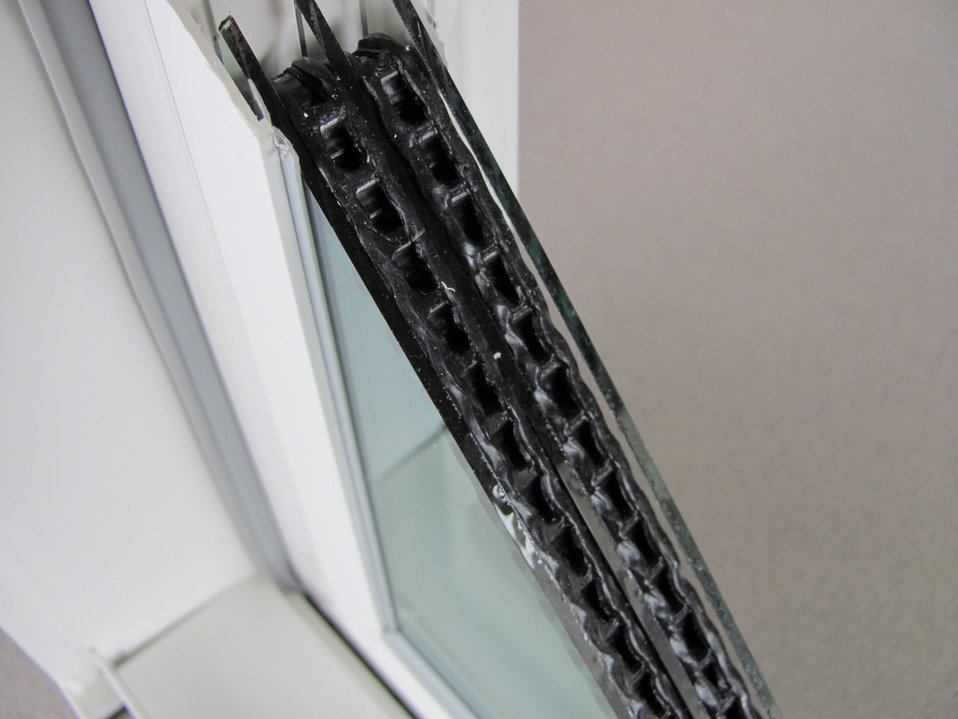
At Pacific Northwest National Laboratory, highly insulating windows can help reduce heat loss in residential commercial buildings by as much as 20 percent in heating-dominated climate zones, like Salt Lake City.
The Department of Energy's High Performance Windows Volume Purchase Program recently expanded, to include more highly insulating windows and an upgrade website, to encourage consumers to purchase these windows.